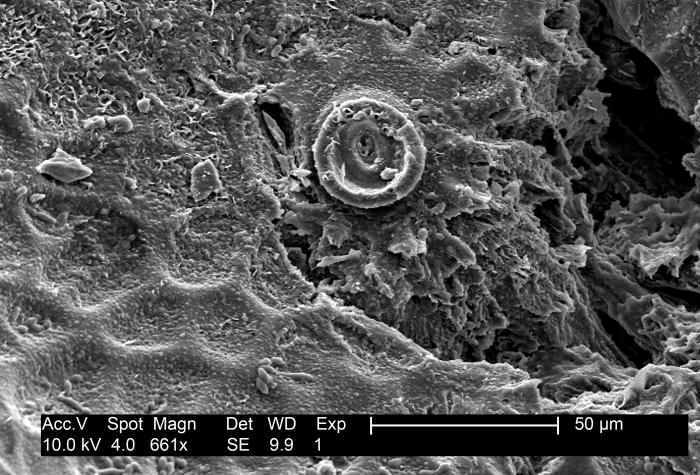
Magnified 661X, this electron micrograph reveals the details of the textured surface found on a honeydew melon, Cucumis melo.Tips for Fresh Produce SafetyBuying Tips: